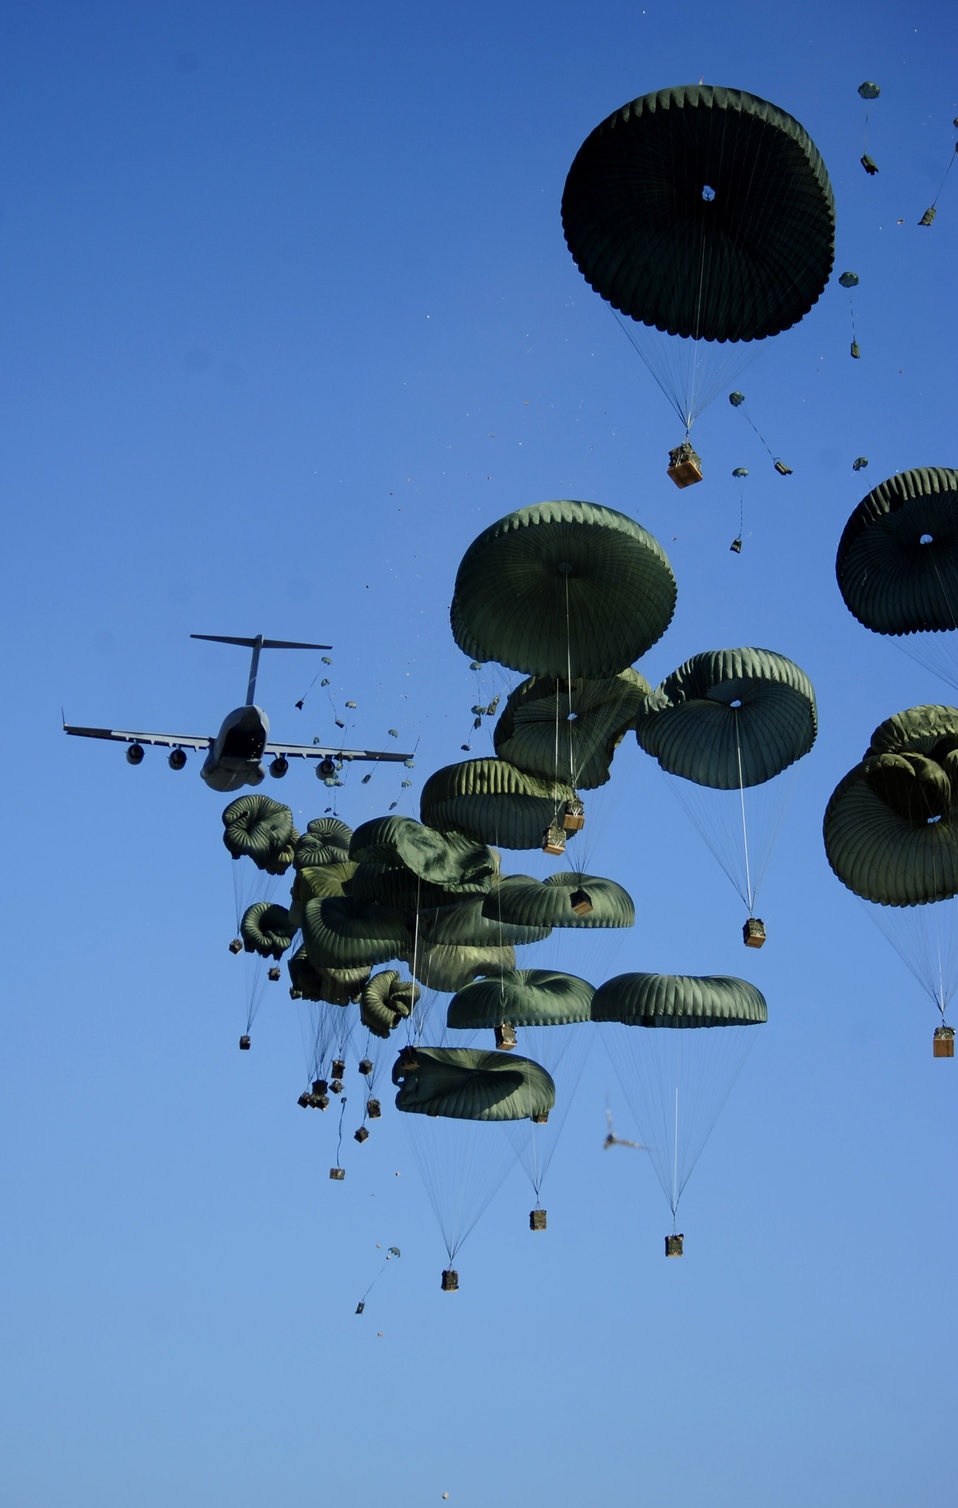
Haiti Earthquake Relief

A C-17 Globemaster III delivers humanitarian aid into the outskirts of Port-au-Prince, Haiti, Jan 18, 2010. Department of Defense assets have been deployed to assist in the Haiti relief effort following a magnitude 7 earthquake that hit the city on Jan. 12, 2010.